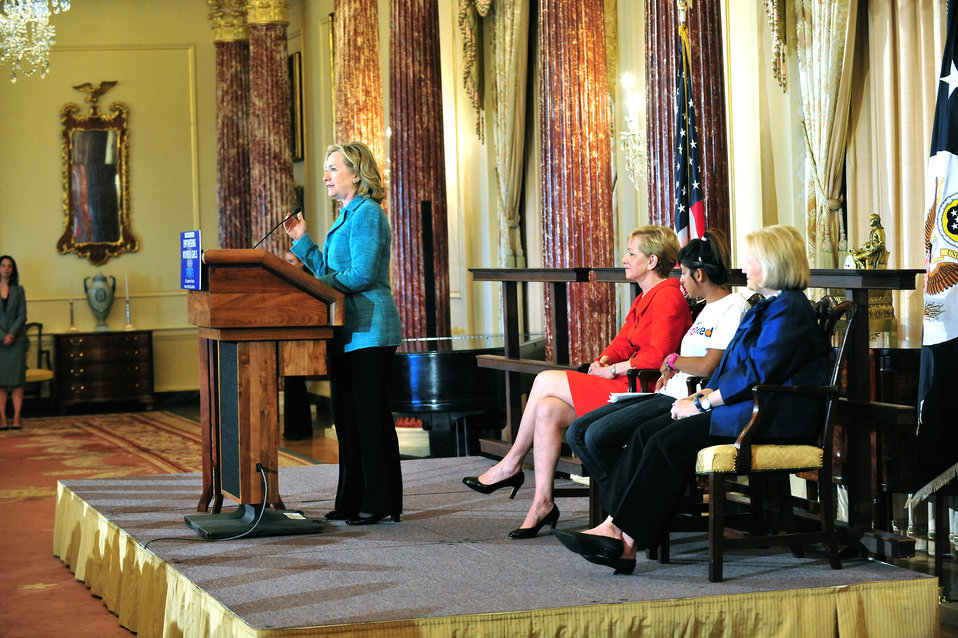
Secretary Clinton Launches the Women's World Cup Initiative and Marks the Kick-Off of the 40th Anniversary Year of Title IX

U.S. Secretary of State Hillary Rodham Clinton launches the Women's World Cup Initiative and marks the kick-off of the 40th Anniversary Year of Title IX, at the U.S. Department of State in Washington, D.C., on June 6, 2011.